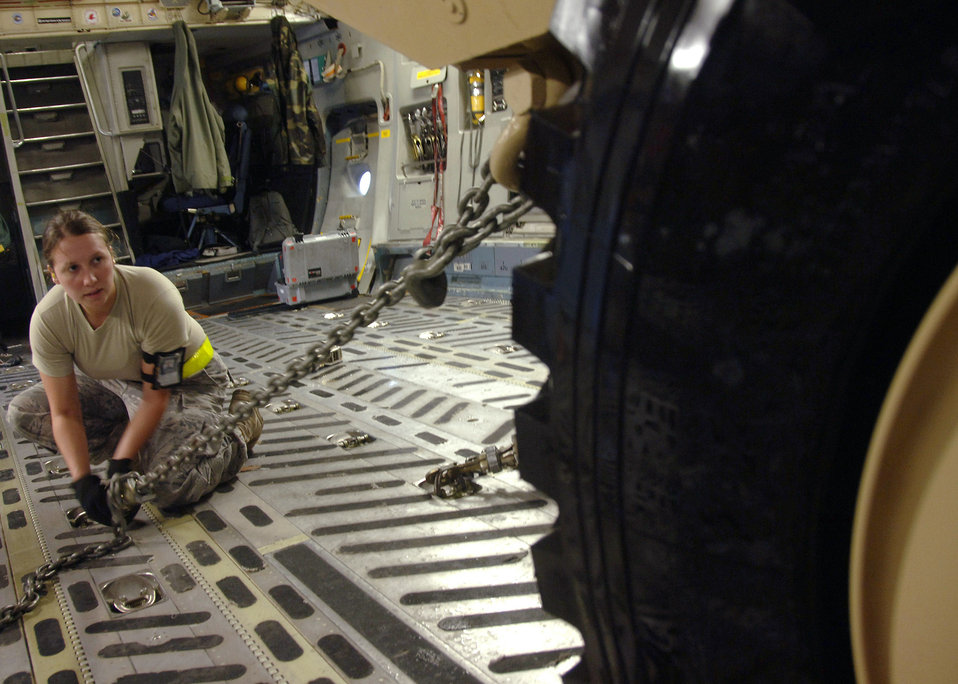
Charleston officials ship vehicles to support warfighters

Senior Airman Ashley Kelly tightens a clamp to secure an armored security vehicle to the bed of a C-17 Globemaster III Oct. 24 at Charleston Air Force Base, S.C. The ASV is a four-wheel-drive vehicle that provides ballistic protection to warfighters who are using them against various threats. Airman Kelly is assigned to the 437th Aerial Port Squadron.